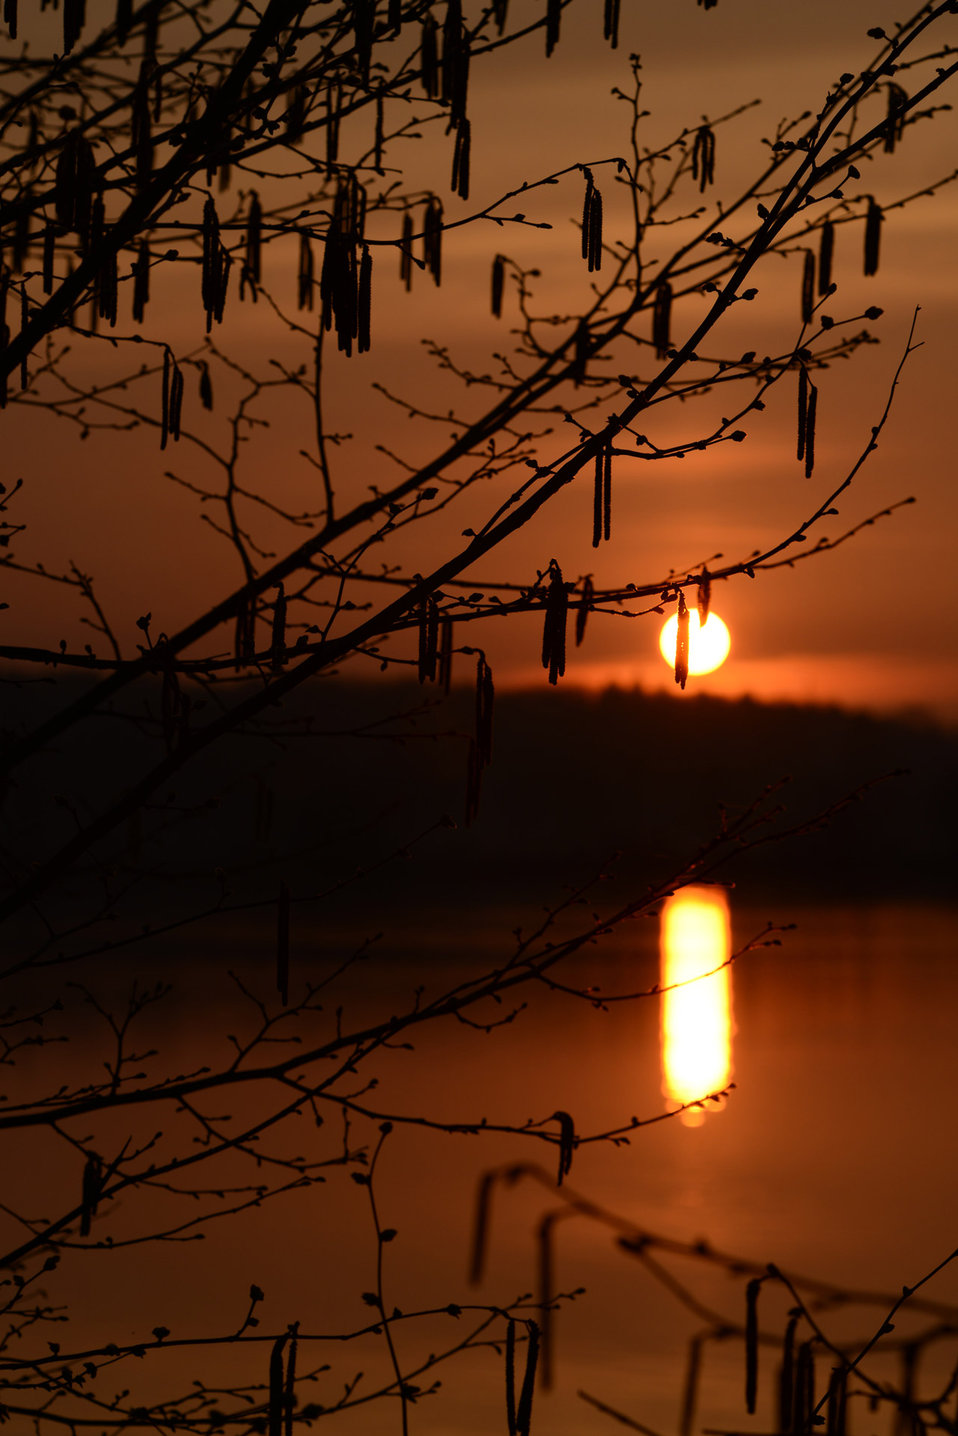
Sunrise over the pond.